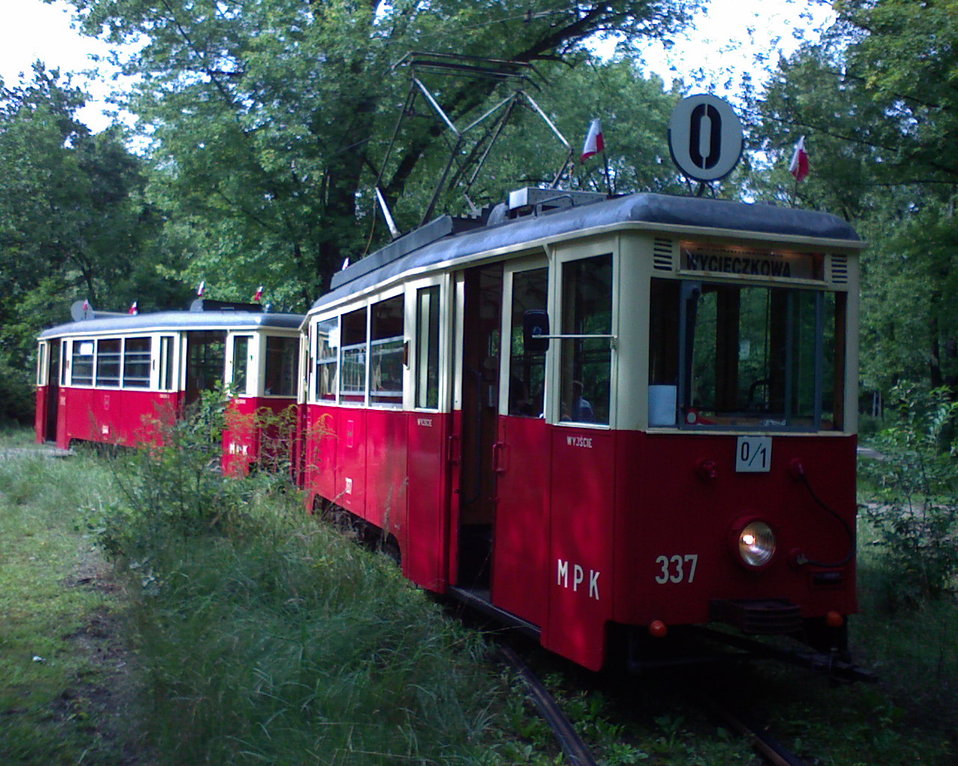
The '0' line tram (#337) in Łódź, Poland, standing at the Zdrowie stop.